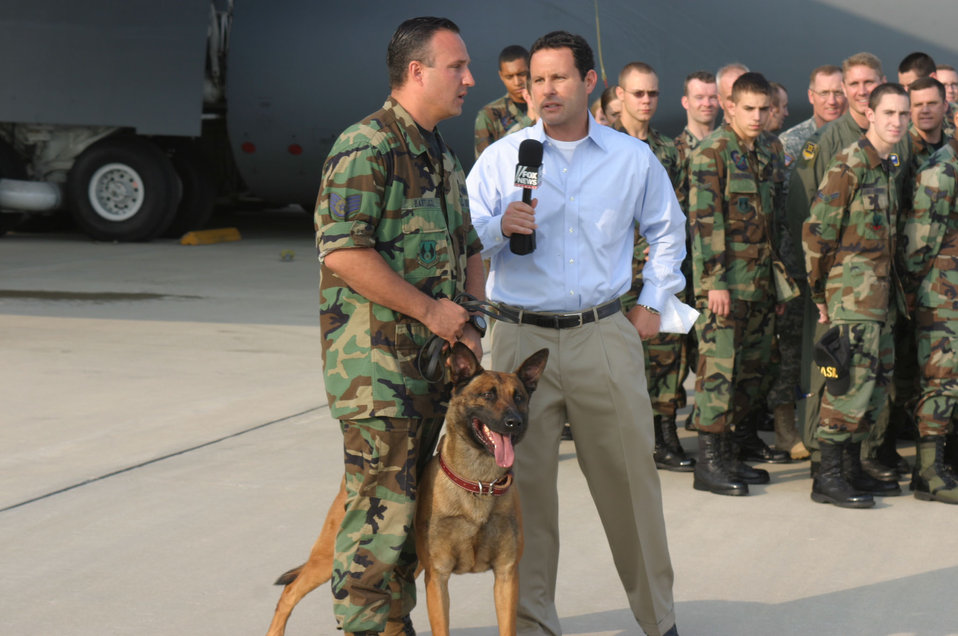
'FOX and Friends' shines spotlight on Wright-Patterson AFB

During one live segment from Wright-Patterson Air Force Base, Ohio,